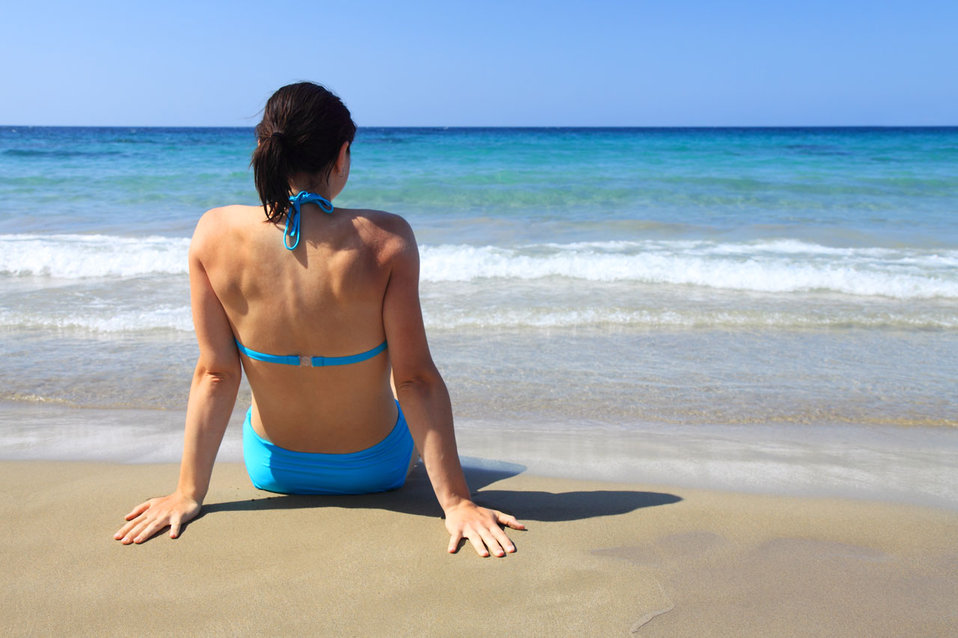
Woman sitting in sand and looking at the sea.